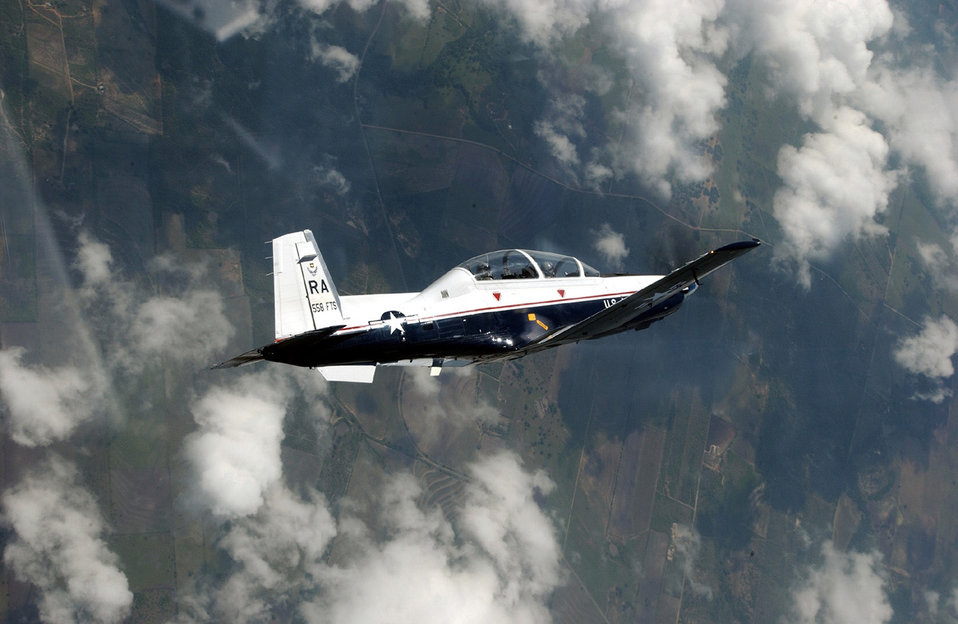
Texan banking

RANDOLPH AIR FORCE BASE, Texas -- A T-6A Texan II banks over the south Texas landscape during a 12th Flying Training Wing Pilot Instructor Training flight. The 12th FTW was the first Air Force installation to fly the T-6A and is the host unit for the T-6A Texan II Demonstration Team.